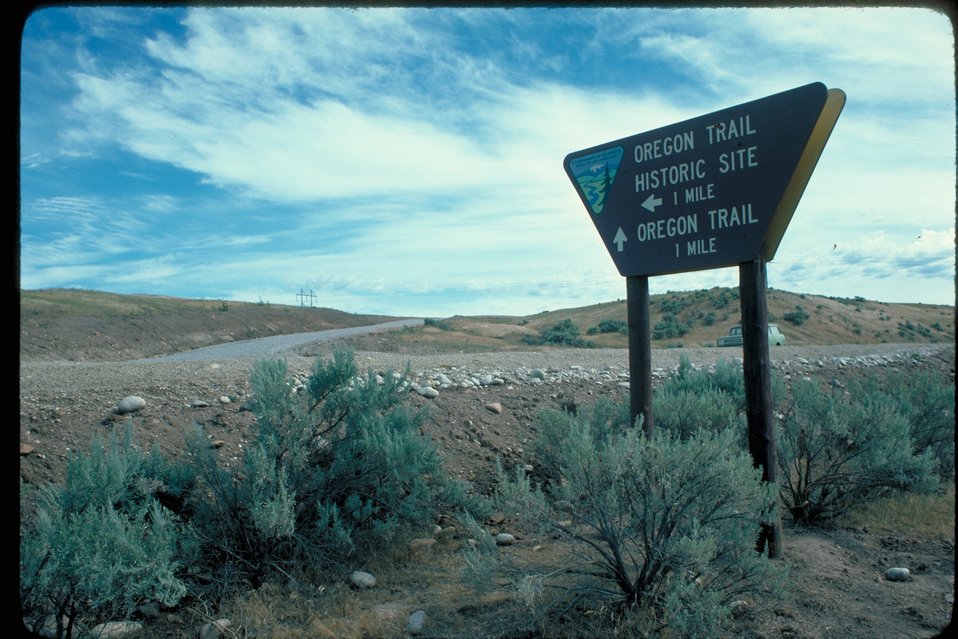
Blacks Creek and Bonneville Point roads Oregon Trail Lower Snake River District